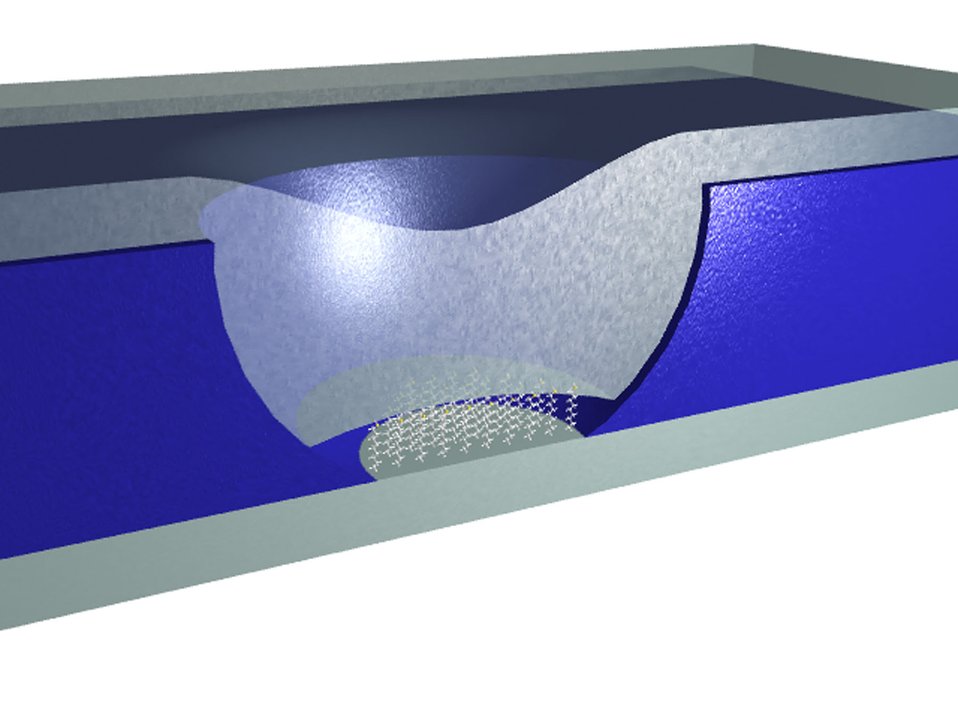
Molecular Spintronic Action Confirmed in Nanostructure

NIST researchers made the first confirmed 'spintronic' device incorporating organic molecules using a nanoscale pore test structure, which consisted of self-assembled molecules (shown in white within the middle blue layer in the illustration) sandwiched between nickel and cobalt electrodes (gray top and bottom layers). The pore structure, less than 40 nanometers in diameter, confines the molecules to a very small area, thus enabling good molecule-metal contacts and limiting defects.